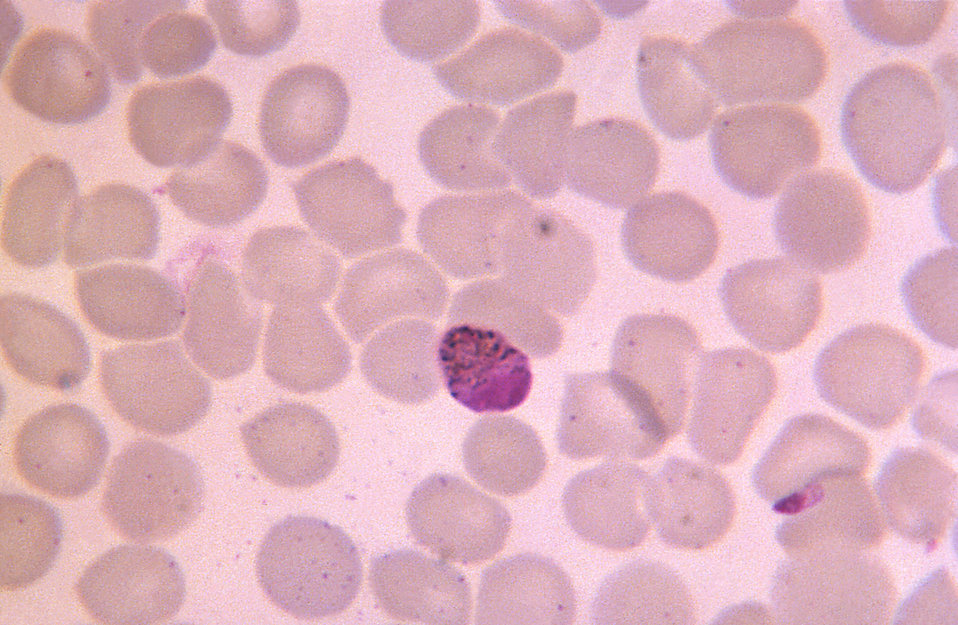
This thin film micrograph depicts a Plasmodium malariae microgametocyte.